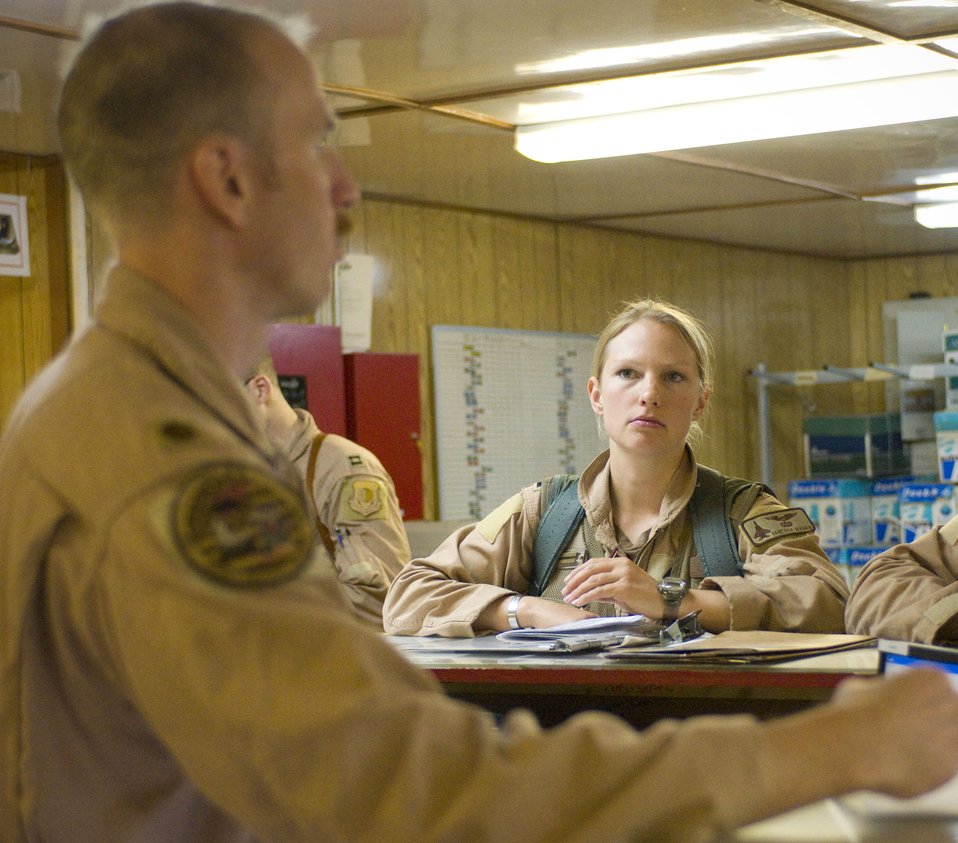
Strike Eagles fly dawn patrol

Capt. Vanessa Mahan receives a preflight briefing from Maj. Tom Laitinen Aug. 27 before her dawn patrol mission at Bagram Air Field, Afghanistan. Before flight, pilots and weapon systems officers must receive this briefing to make sure everyone is